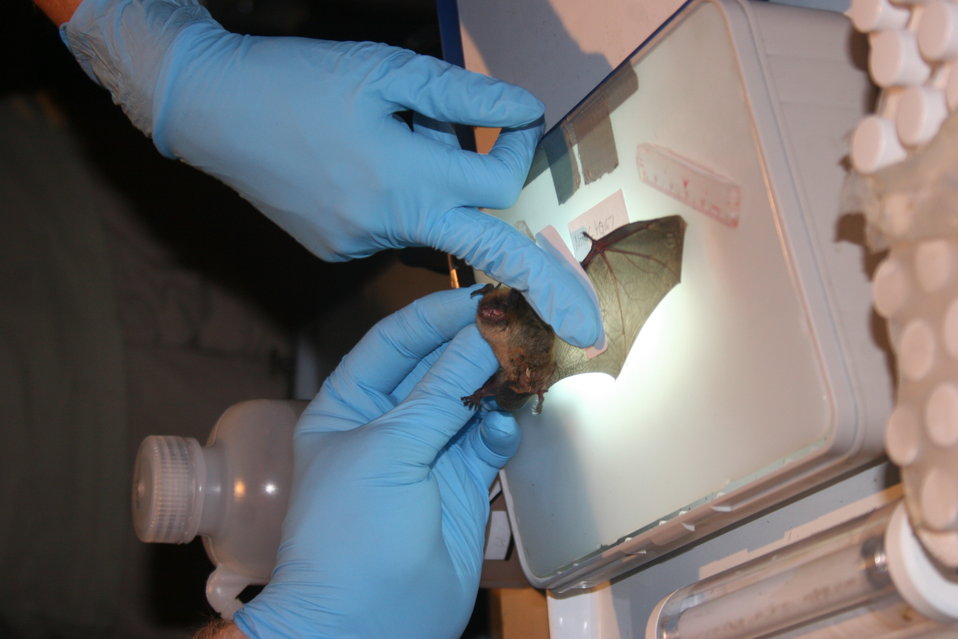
Taking sebum sample

Biologists and researchers take sebum samples for analysis.